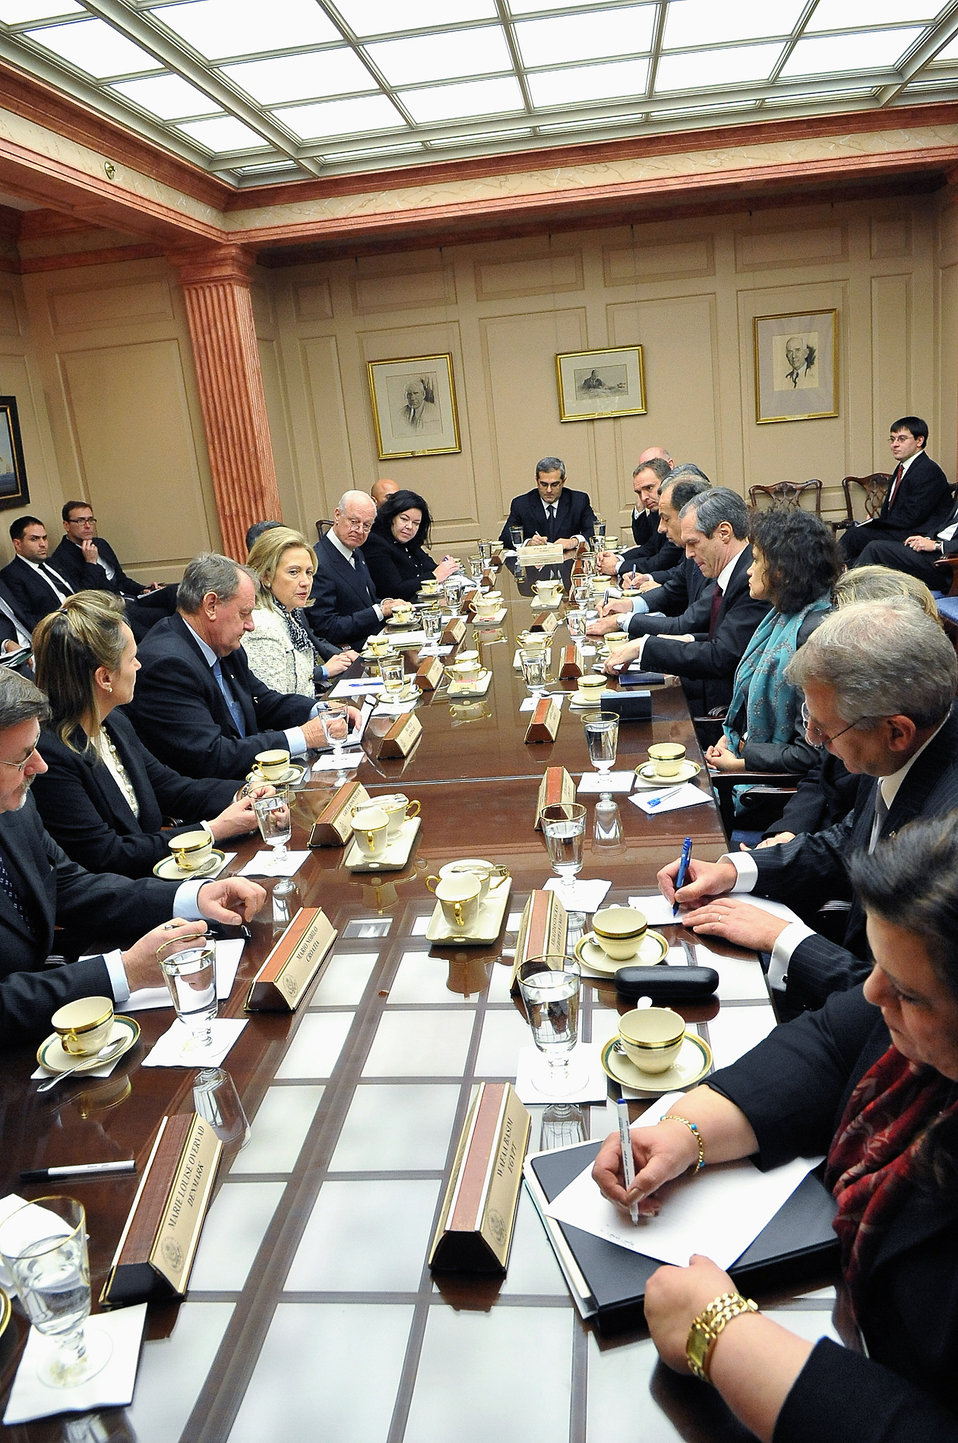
Secretary Clinton Meets With Special Represenatives for Afghanistan and Pakistan

U.S. Secretary of State Hillary Rodham Clinton meets with meets with Special Representatives for Afghanistan and Pakistan (SRAP) at the U.S. Department of State in Washington, D.C., on January 14, 2011.